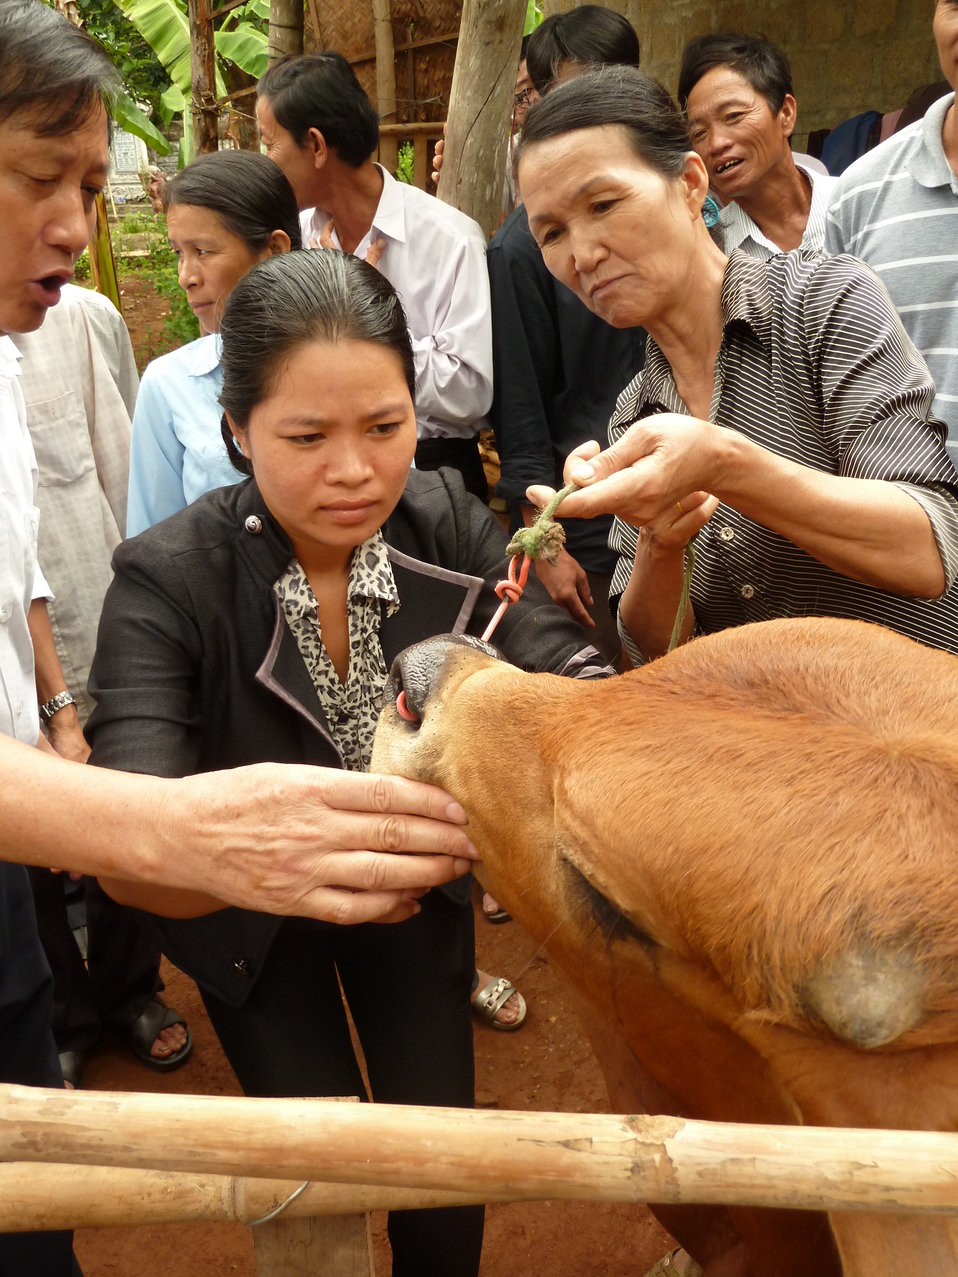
Animal health worker training in Quang Tri Province.

USAID support has gone beyond avian influenza to provide training to animal health workers in rural areas like Quang Tri to address all diseases that can start in animals and spread to humans. Here, an animal health worker learns to give medicine to a cow.